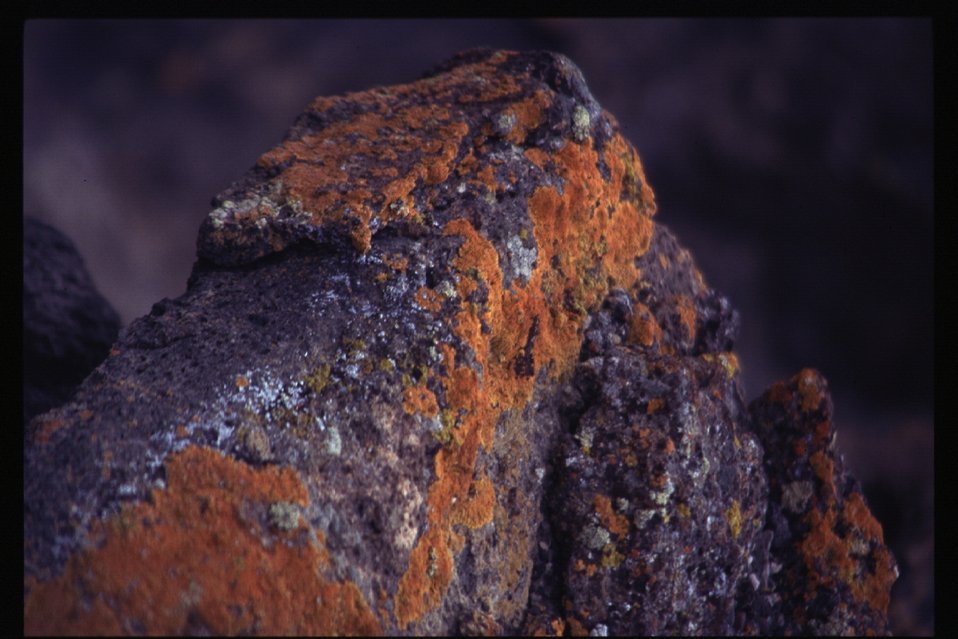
Orange lichen Snake River Canyon Owyhee Field Office LSRD Lower Snake River District